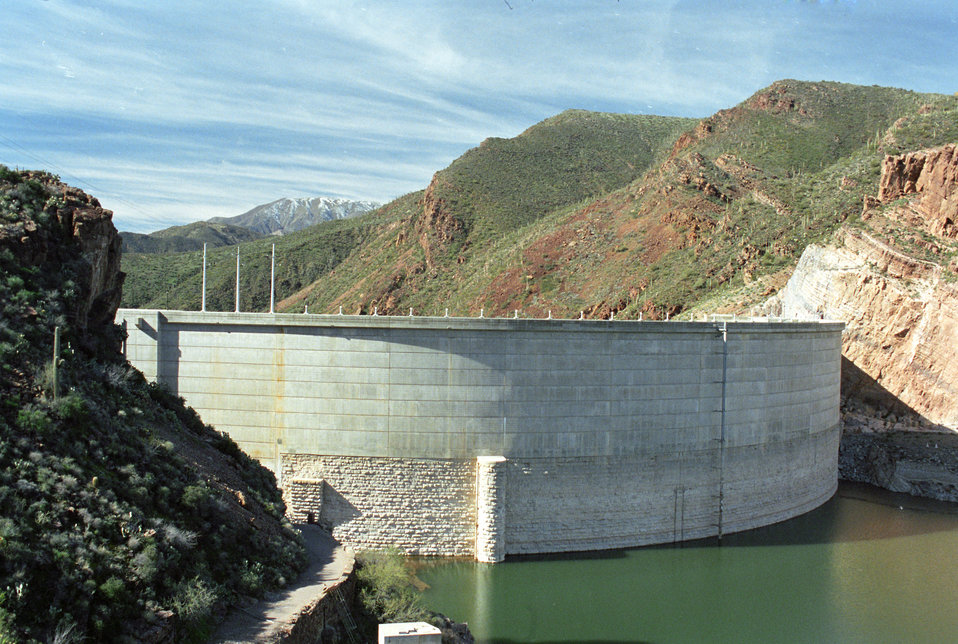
Theodore Roosevelt Dam forms Theodore Roosevelt Lake on the Salt River in the Tonto National Forest near Tucson, AZ on January 24, 2001. Theodore Roosevelt personally dedicated the Theodore Roosevelt Dam in March 1911. The dam is 357 feet (109 m) high and forms Theodore Roosevelt Lake as it impounds the Salt River. Originally built between 1905 and 1911, the dam was renovated and expanded in 1989-1996. Serving mainly for irrigation water supply and flood control, the dam also has a hydroelectric generating capacity of 36 megawatts.